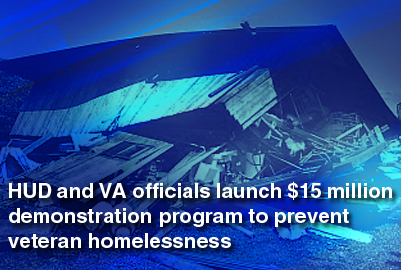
Veteran homelessness prevention